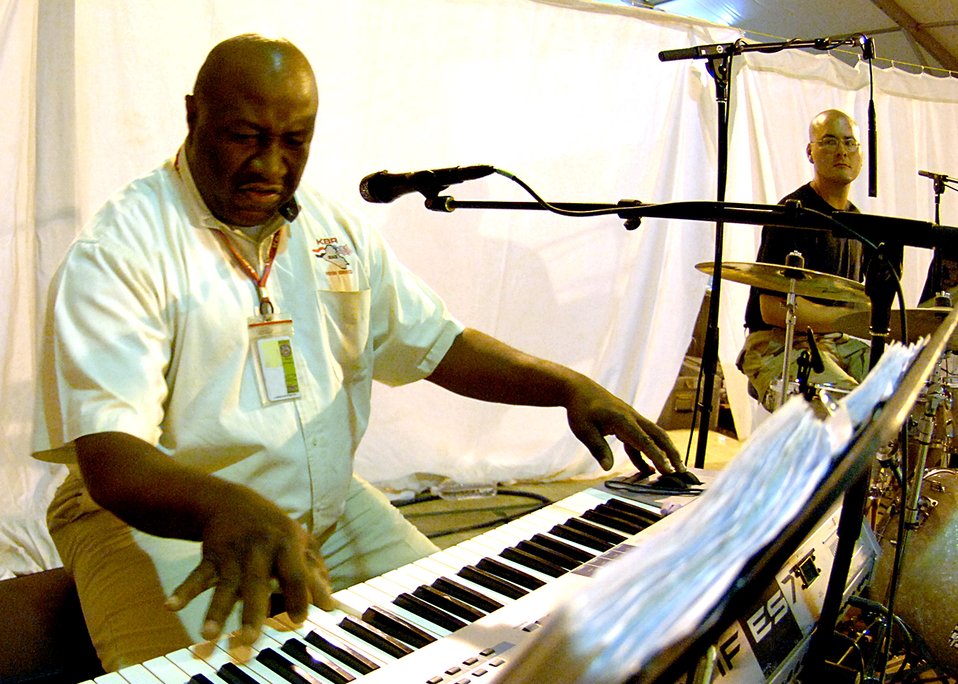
On tour in the AOR

Dennis Arlington grooves on the piano while playing with the U.S. Central Command Air Forces Band